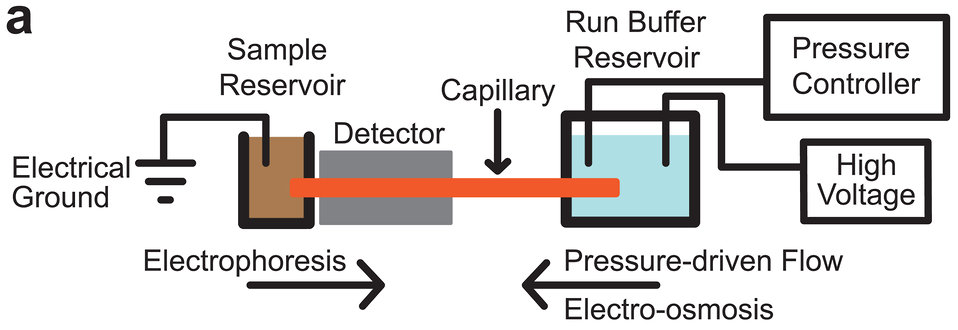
GEMBE; lab-on-a-chip

The NIST GEMBE microfluidic sample analysis system is shown schematically.